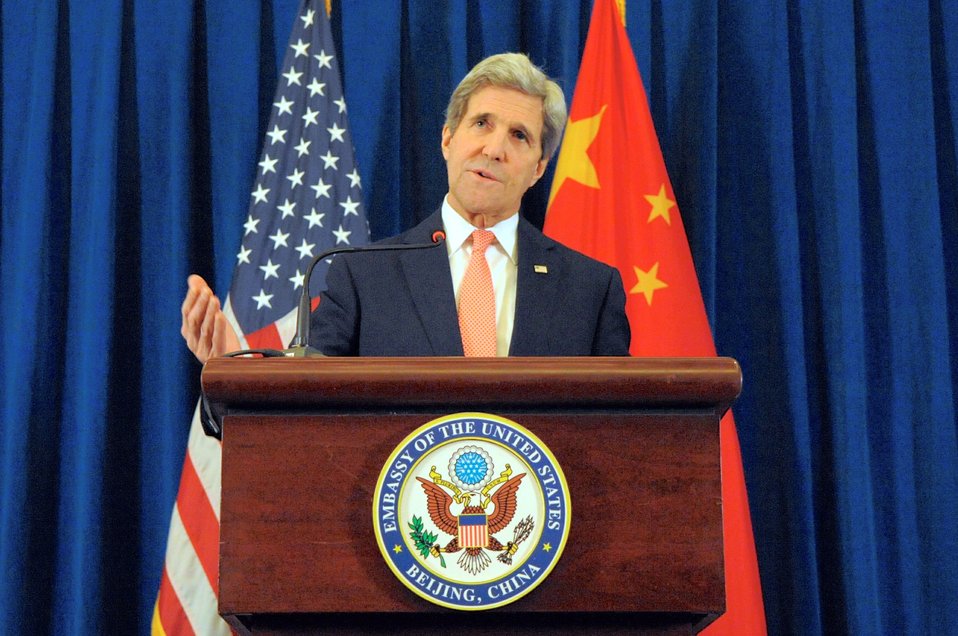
Secretary Kerry Addresses Reporters After Meetings in Beijing

U.S. Secretary of State John Kerry recaps a day of meetings with high-level Chinese leaders during a news conference in Beijing, China on February 14, 2014.